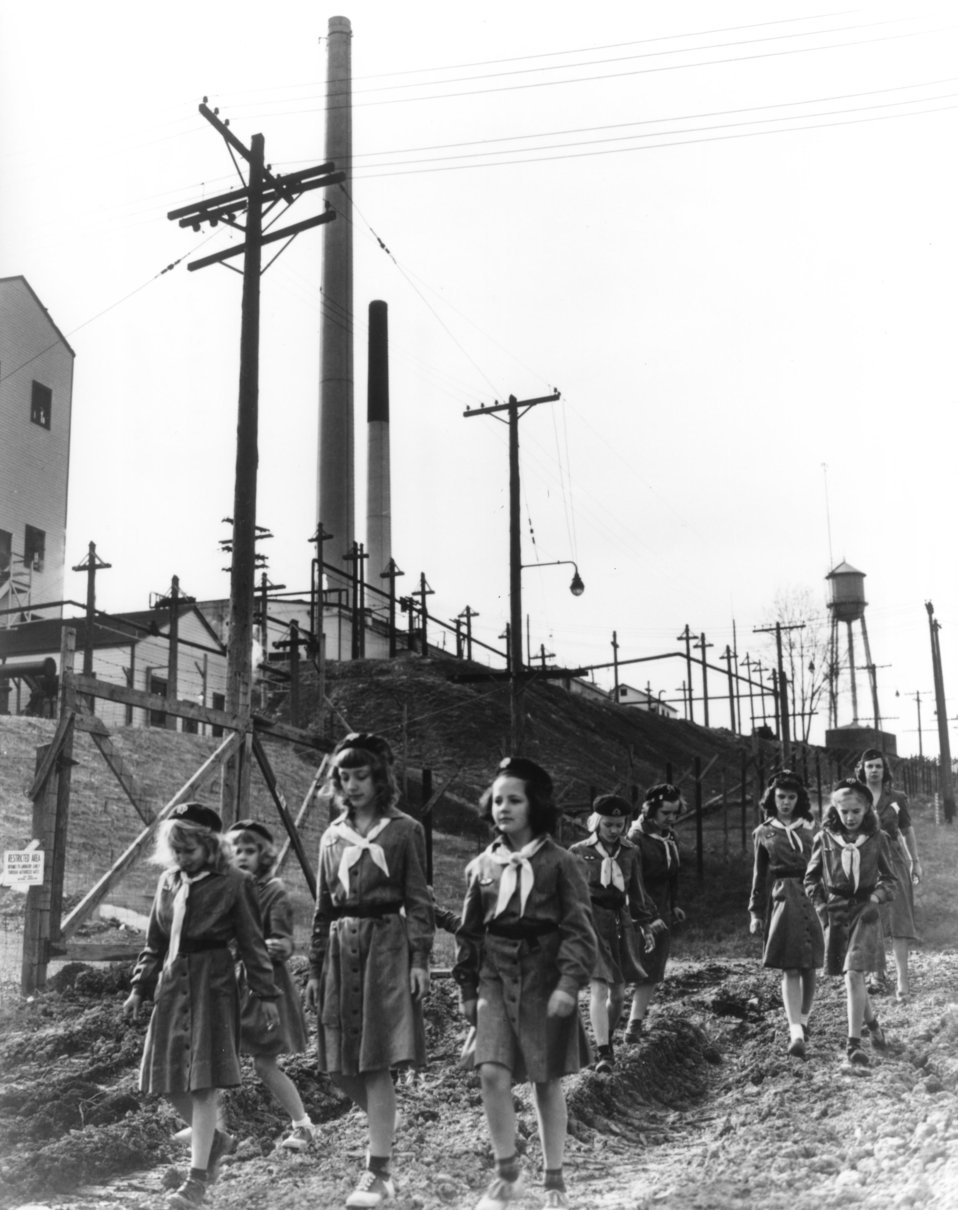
Recreation at Oak Ridge